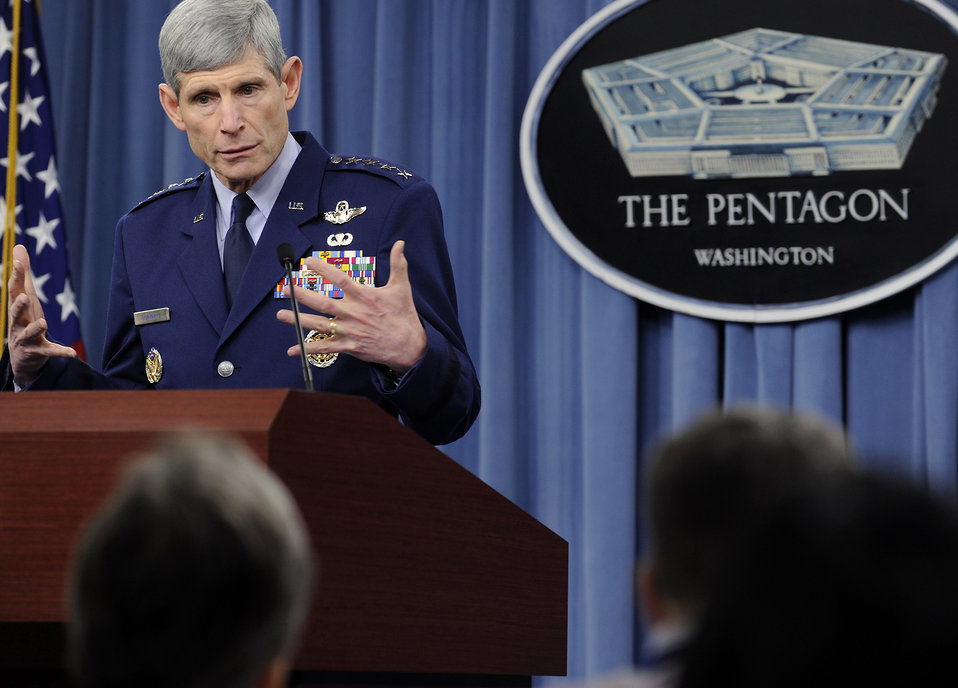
CSAF talks AF strategy

Air Force Chief of Staff Gen. Norton Schwartz delivers comments about the new defense strategy to members of the media in the Pentagon on Jan. 27, 2012. Throughout the ongoing budget process, Schwartz said, the Air Force will remain committed to its ongoing responsibilities to provide globally-postured, regionally-tailorable, full-spectrum airpower.